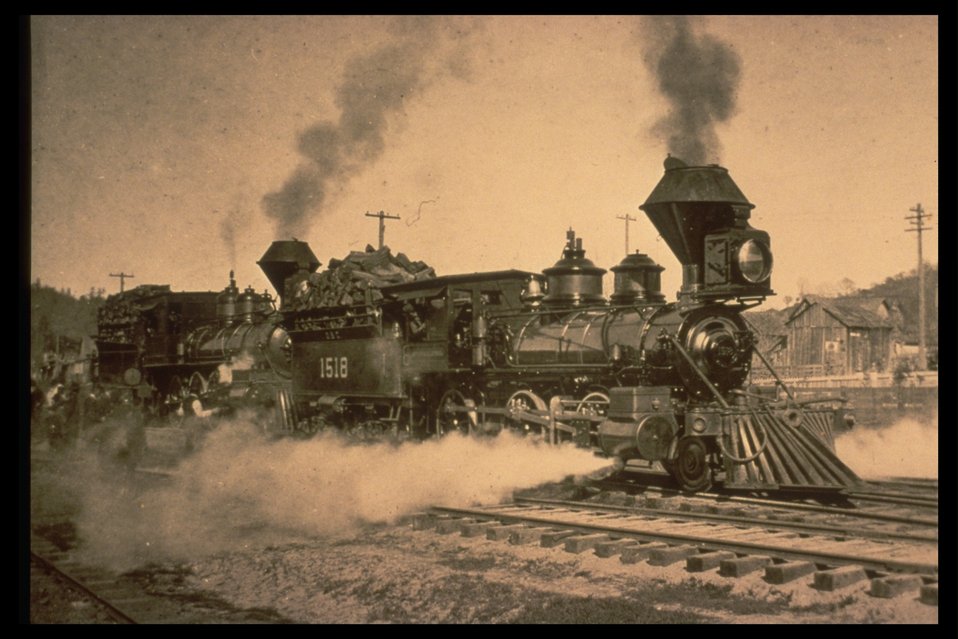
Black and White photo of an old steam engine logging train. Letting out lots of steam!